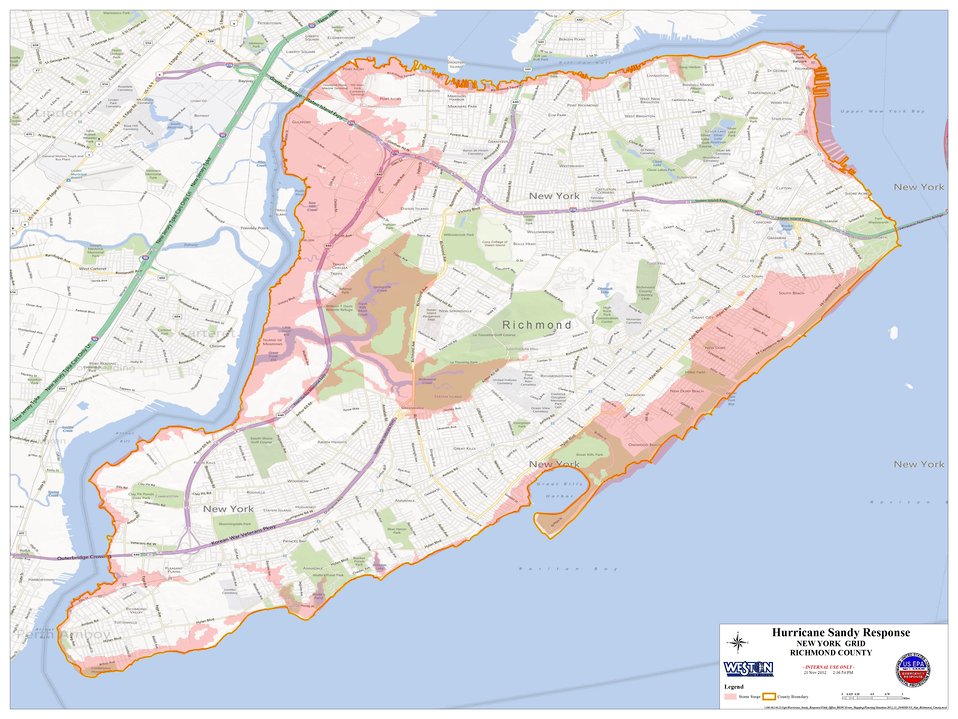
Hurricane Sandy Hazardous Waste Pickup Sites - Richmond County

We're working with the New York City Department of Sanitation to collect and properly dispose of potentially hazardous common household products from flood-damaged homes and residences in New York City through Dec. 2, 2012. Here's the map for Richmond County.